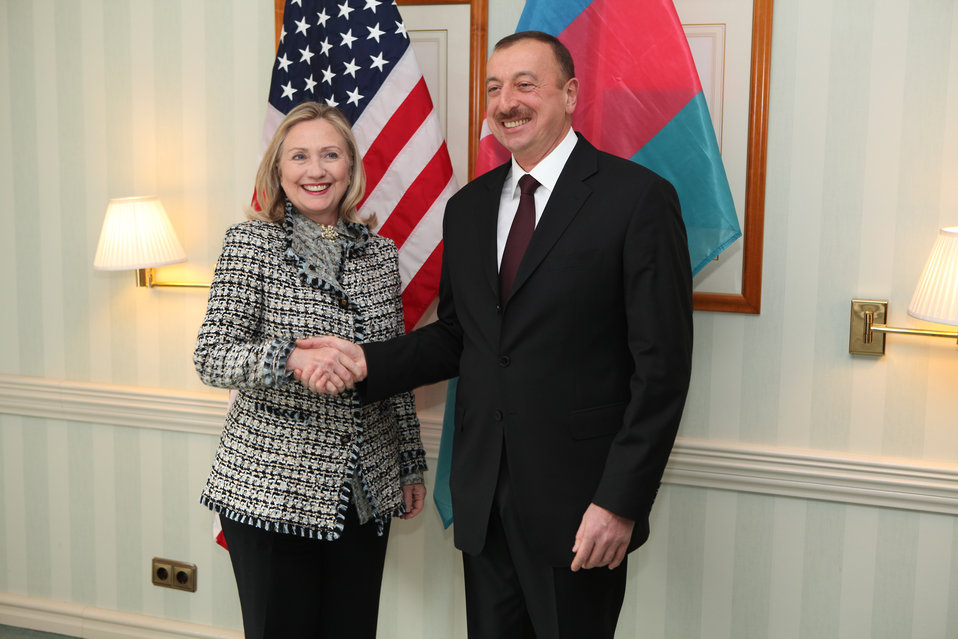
Secretary Clinton Meets With Azerbaijani President Aliyev

U.S. Secretary of State Hillary Rodham Clinton meets with Azerbaijani President Ilham Aliyev in Munich, Germany, on February 4, 2012.